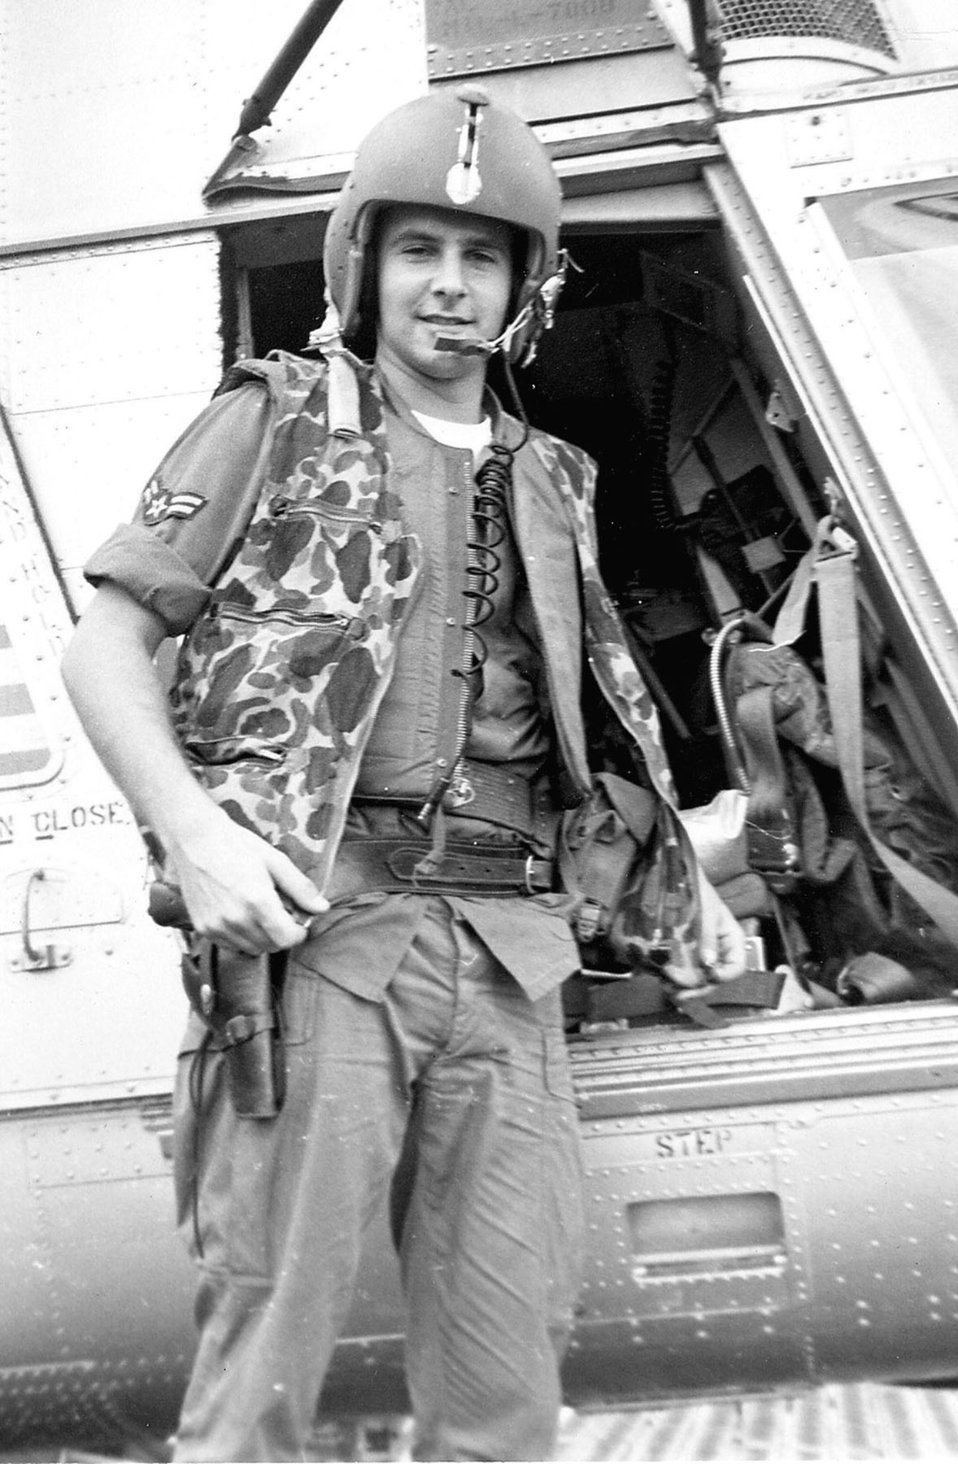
Airman 1st Class William Pitsenbarger

A1C William Pitsenbarger.